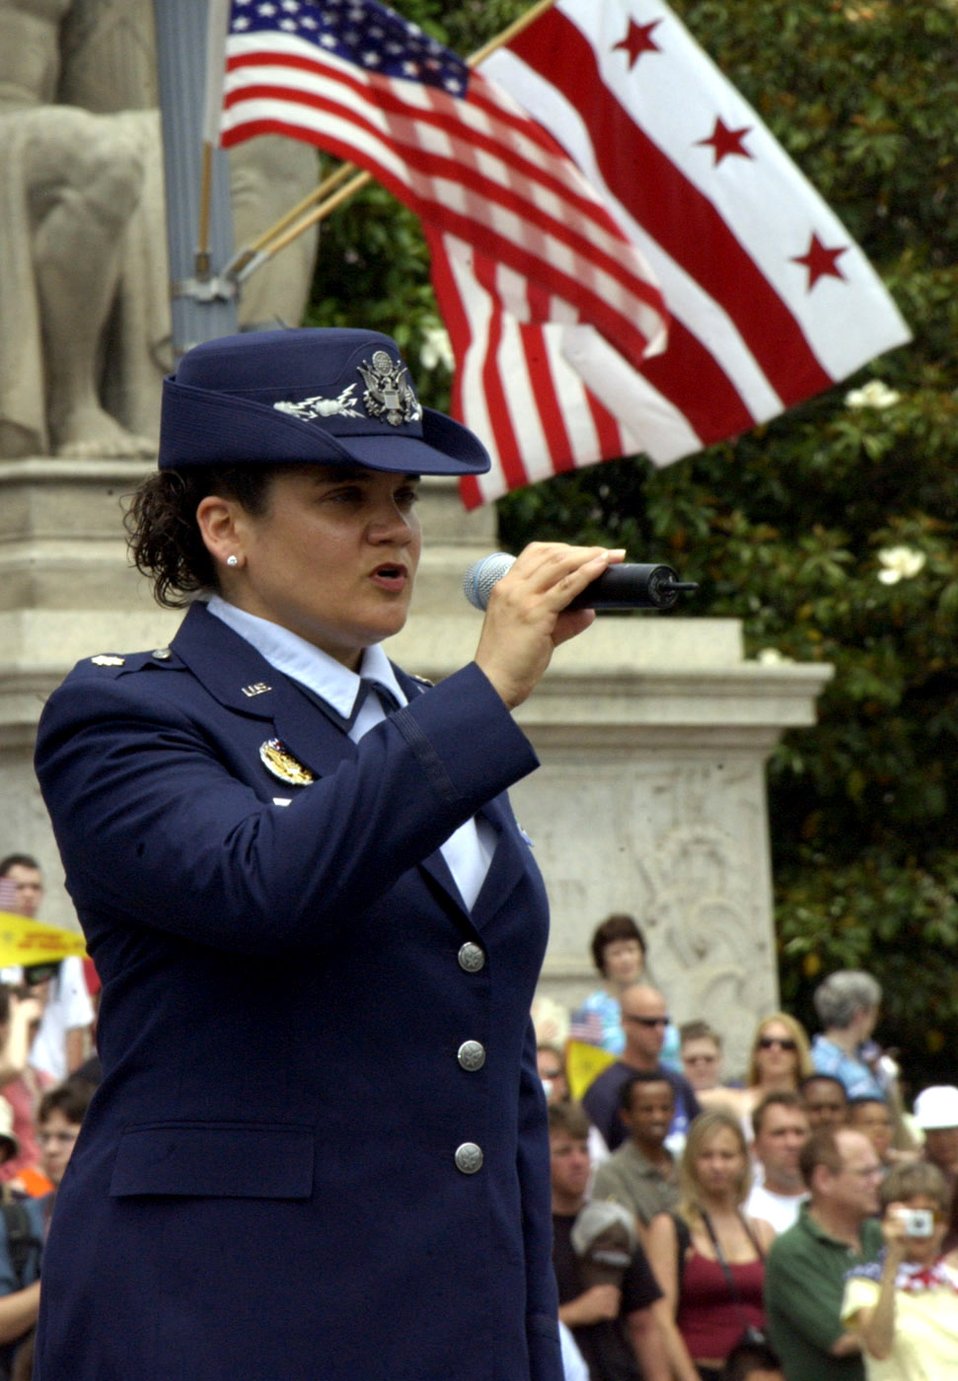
Memorial Day activities

Maj. Kat Strus, from the Air Force District of Washington A1 office, sings the